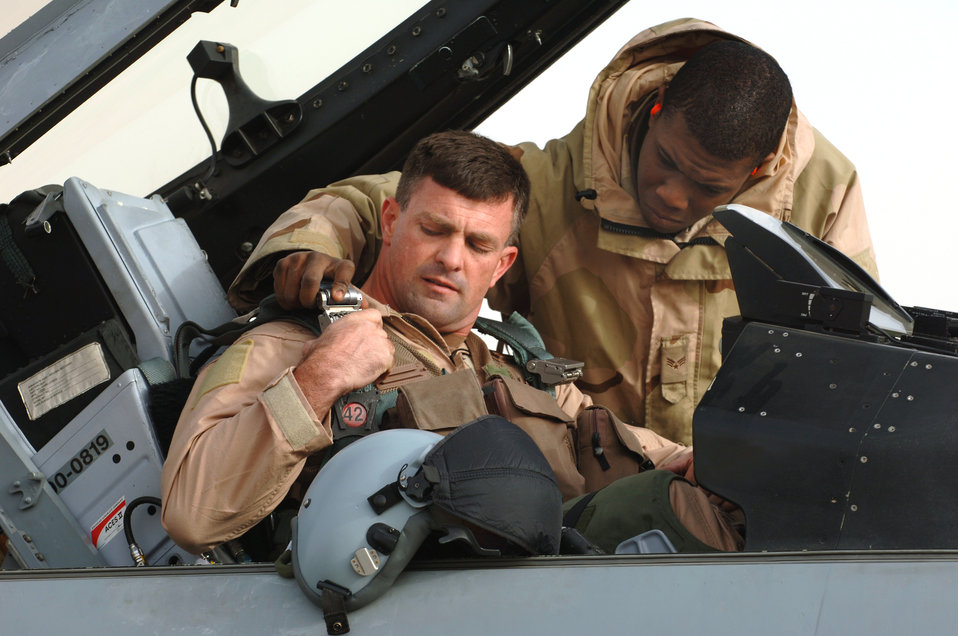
Buckle up

Lt. Col. Chris Ashby gets assistance strapping into an F-16 Fighting Falcon from Senior Airman Robert Gattison before departing for a combat mission Jan. 29 at Balad Air Base, Iraq. Colonel Ashby is the 332nd Air Expeditionary Wing chief of safety from the 20th Fighter Wing at Shaw Air Force Base, S.C. Airman Gattison is a crew chief assigned to the 14th Expeditionary Aircraft Maintenance Squadron.